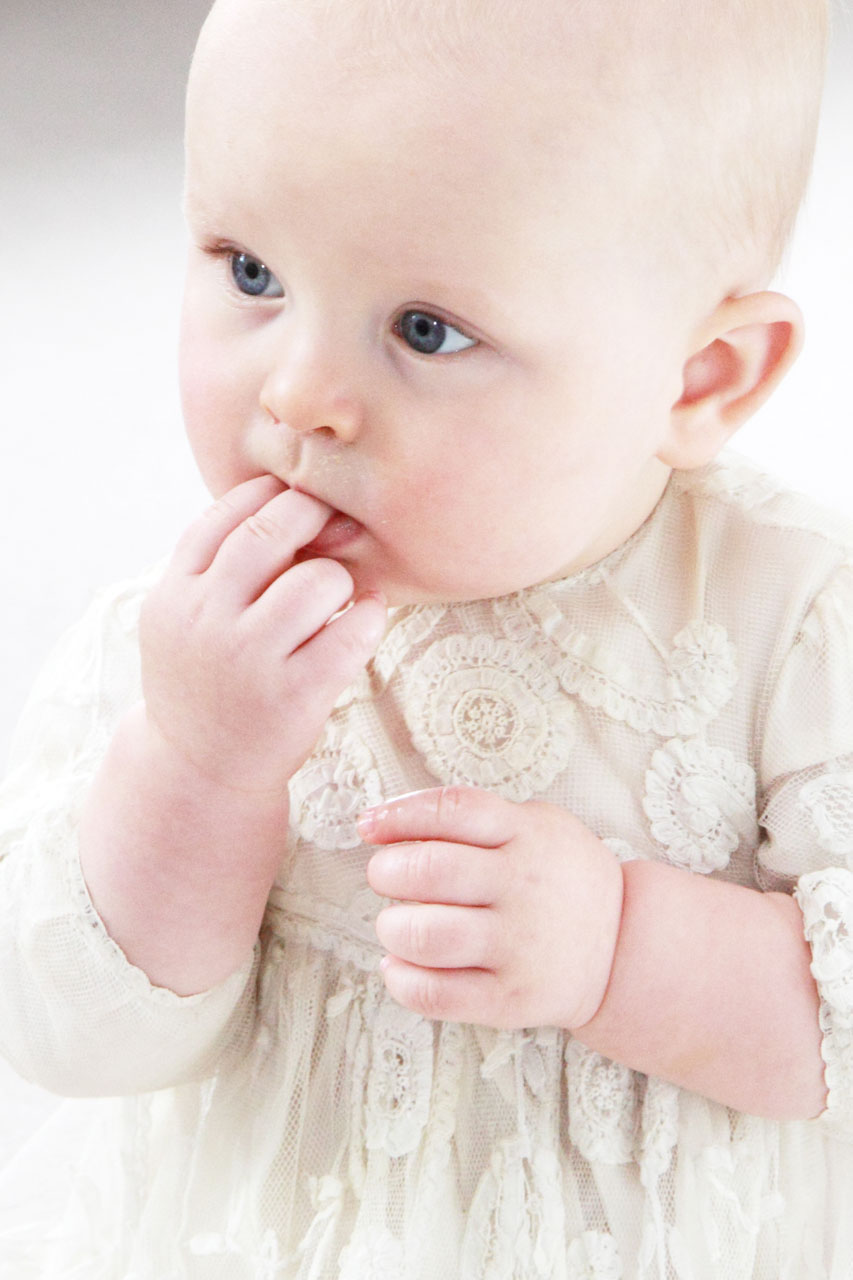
Little baby

Curious little baby boy.